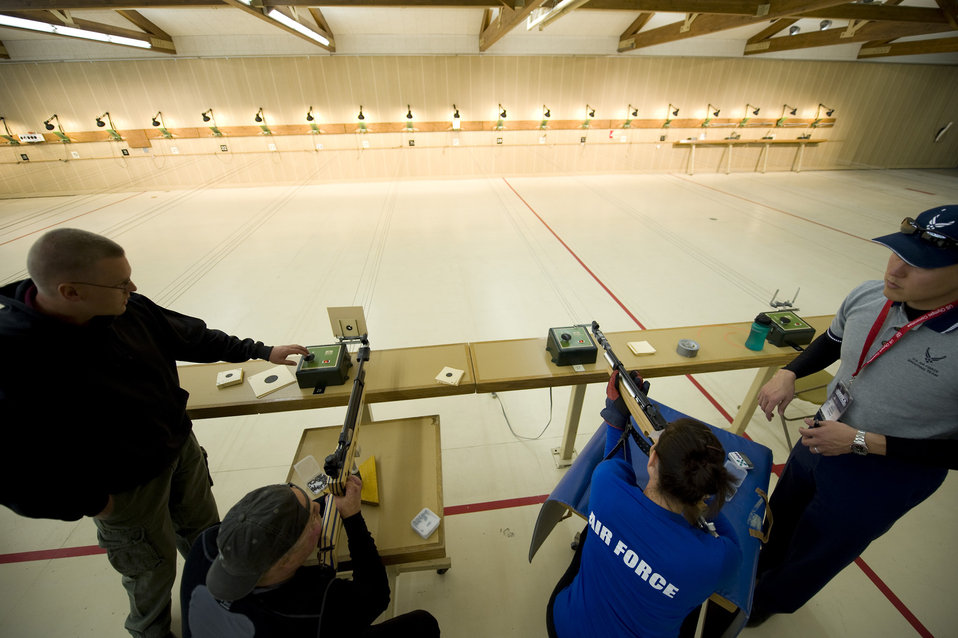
Warrior Games Airmen prepare for competition

Former Staff Sgt. Stacy Pearsall and Tech. Sgt. Israel Del Toro practice shooting May 11, 2010, at the Olympic Training Center in Colorado Springs, Colo. These athletes are competing in the Warrior Games through May 14, 2010. During these inaugural games, 17 Air Force wounded, injured and ill athletes will compete against athletes from all of the services.